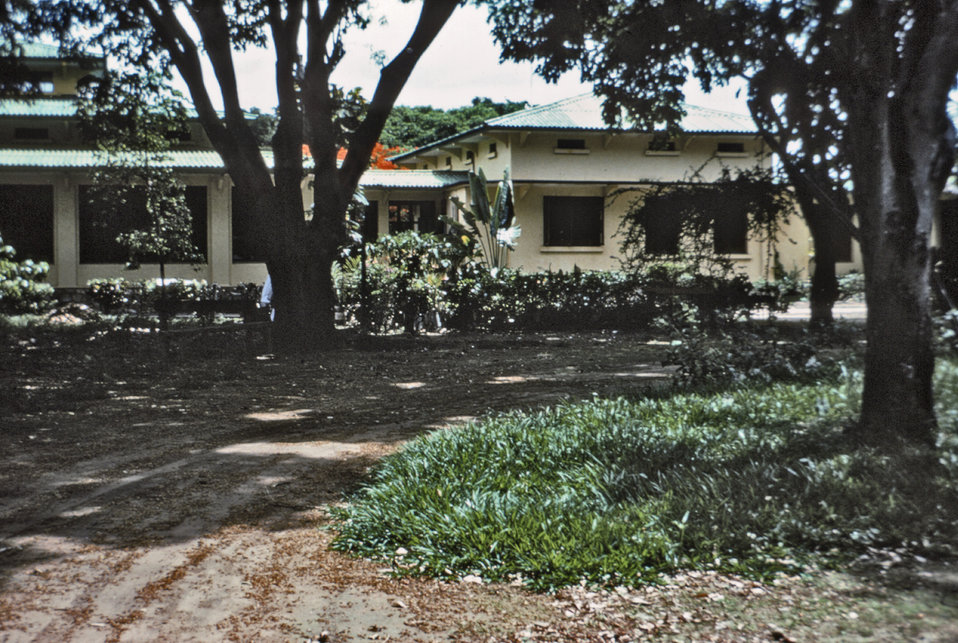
This 1976 photograph showed the back of Pavilion 2 of Ngaliema Hospital, located in Kinshasa, Zaire, the Nation's capital, where some of the earliest Ebola patients died in the fall of that year.